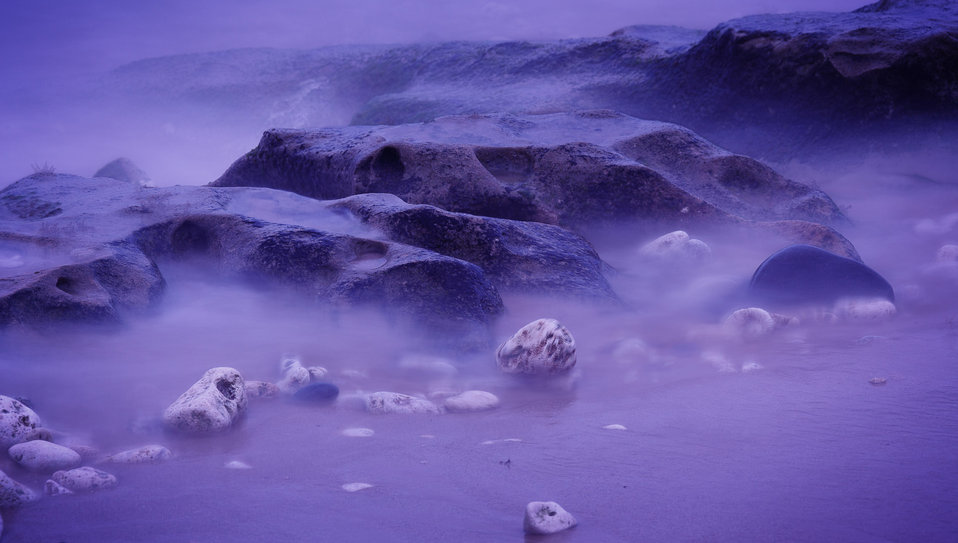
Purple rocky coast

Purple rocks and stones with blurred waves in motion.